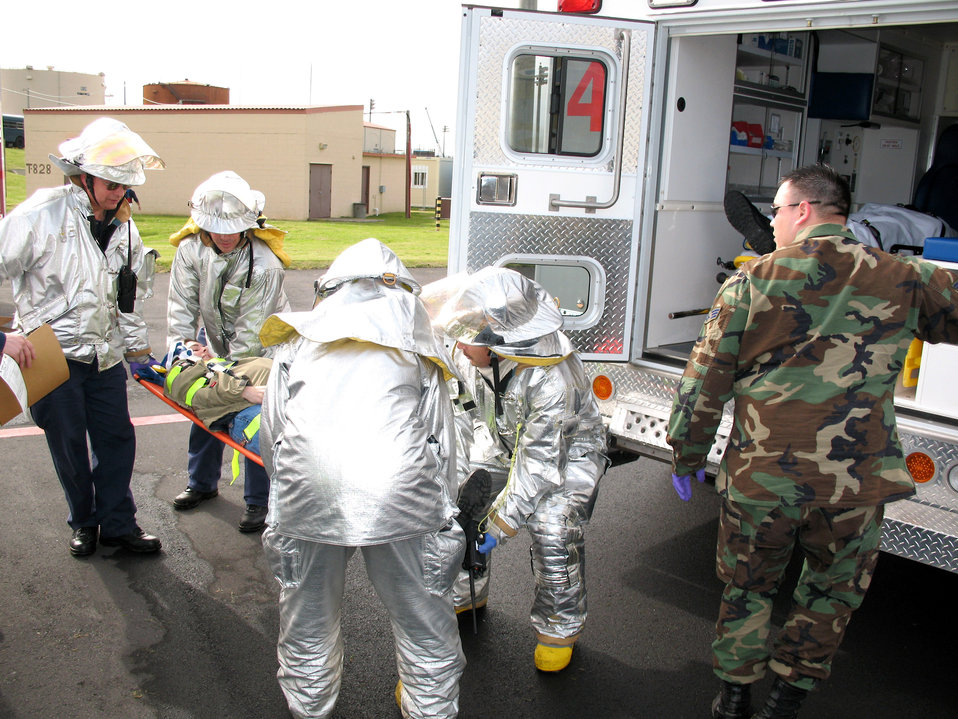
Lajes Airmen tested on readiness capabilities

Senior Airman Rolando Rodriguez (right) prepares an ambulance as base members load a victim of a mock bus accident March 27 at Lajes Field, Azores. The exercise was part of Lajes Field's Operational Readiness Inspection that tested the readiness of Airmen in emergency situations. Airman Rodriguez is an ambulance technician for the 65th Medical Group at Lajes Field.